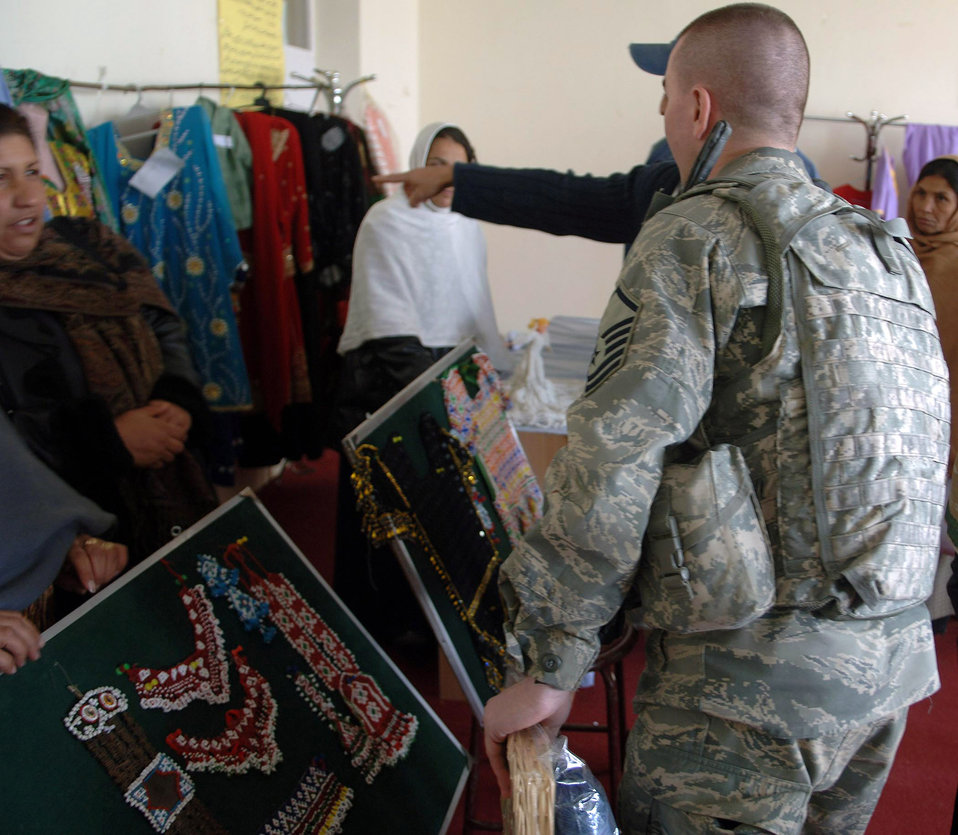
U.S. team opens shelter for Afghan women

KAPISA PROVINCE, Afghanistan - Master Sgt. Charles Liston examines the handmade crafts during the opening of a women's shelter Dec. 13 in Kapisa Province, Afghanistan. The Bagram Provincial Reconstruction Team provided more than $86,000 in support of the shelter's construction, which was accomplished by local contractors. Sergeant Liston is the Structural Superintendent for the Bagram Provincial Reconstruction Team.